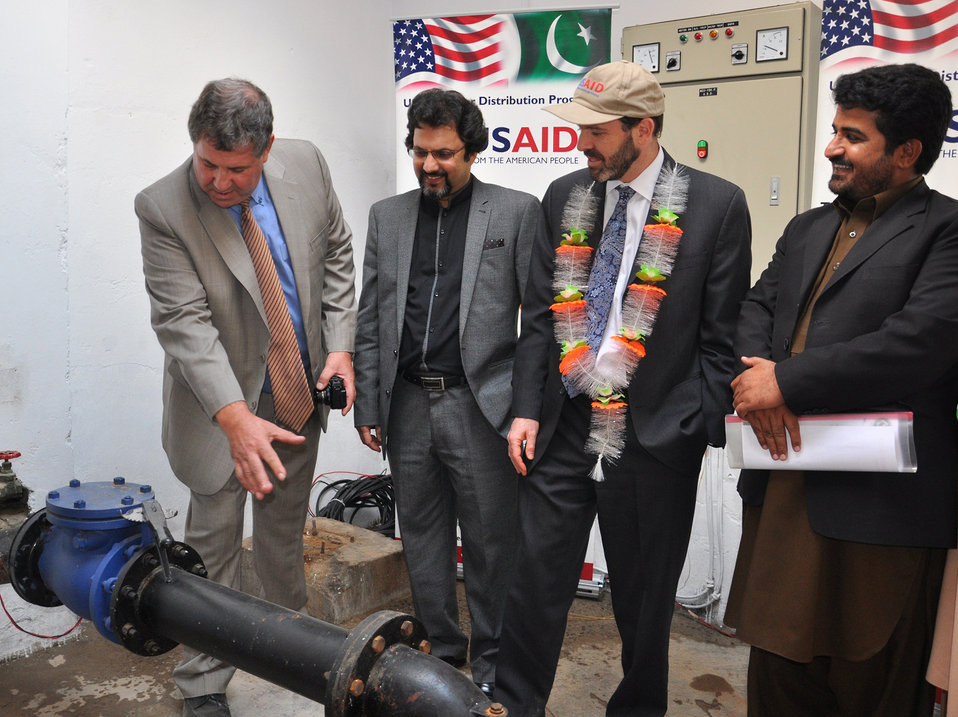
USAID Tubewell Replacement Program

Islamabad, December 10, 2012 – Alexander Thier, Assistant Administrator of the U.S. Agency for International Development (USAID) along with member engineering CDA Sana ullah Aman visit a neighborhood where USAID has recently installed an energy efficient tubewell. USAID is helping CDA replace 187 outdated water tubewells with more energy efficient models to improve water supply and cut down on energy consumption in the city by approximately 2 megawatts.